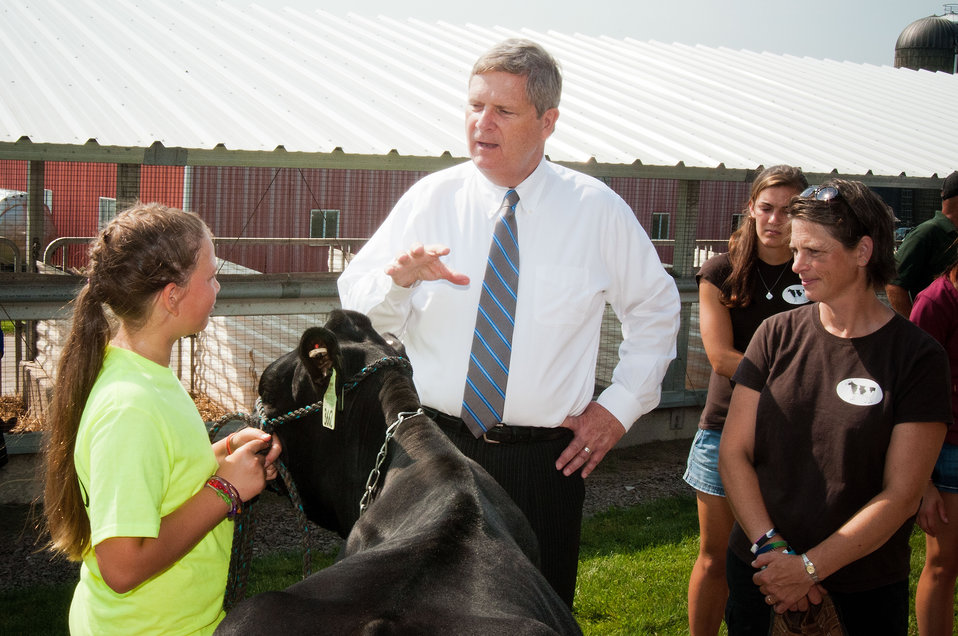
From left: Elizabeth Stoltzfus, “Durasell” a December calf, Abby Stoltzfus and Andrea Stoltzfus discuss the finer points of rearing a calf with Agriculture Secretary Tom Vilsack who participates in a charity event-auctioning cattle and was interested in some expert advice from Elizabeth. Secretary Vilsack toured the Stolzfus's farm in Berlin, PA on Tuesday, July 17, 2012. During his visit Secretary Vilsack highlighted the U.S. Department of Agriculture’s (USDA) energy efficiency programs and announced a new effort to help rural consumers make affordable, energy-efficient improvements to their homes and businesses. Pennwood Dairy Farms uses an anaerobic digester to produce energy for the dairy. An anaerobic digester is a component of a waste management system that captures biogas for energy production. The digester is also part of a planned conservation management system that manages manure as a comprehensive nutrient management system.